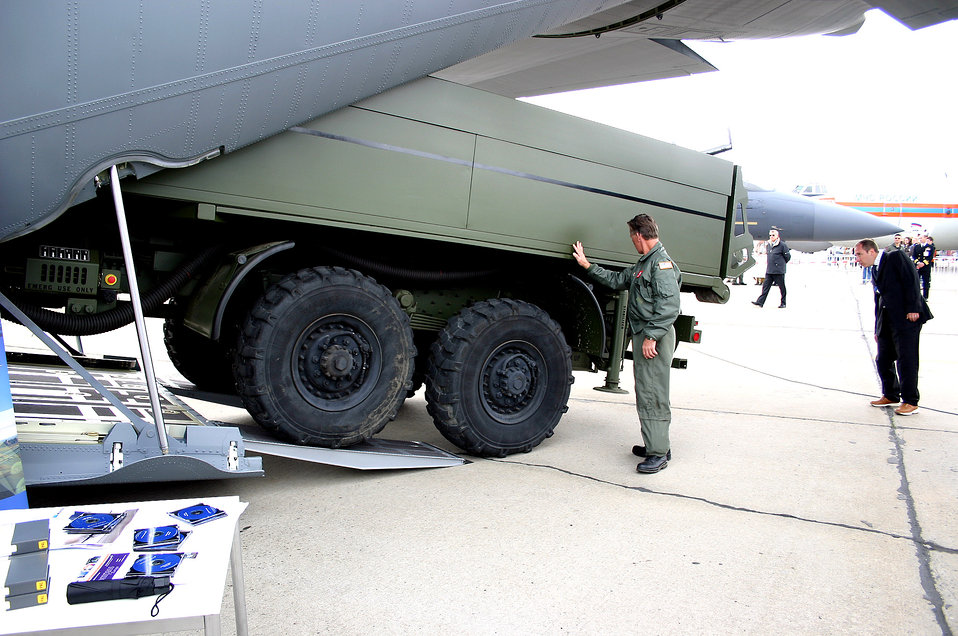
C-130J displays interoperability at Berlin Air Show

Master Sgt. Ronnie Klipp guides a Medium Extended Air Defense System onto a C-130J Hercules during a demonstration of the aircraft's interoperability the Berlin Air Show. Various models of U.S. military aircraft and about 60 support personnel from bases in Europe and the United States are attending the air show at Berlin-Schoenefeld Airport May 16-21. Sergeant Klipp is a crew chief assigned to the 403rd Aircraft Maintenance Squadron at Keesler Air Force Base, Miss.